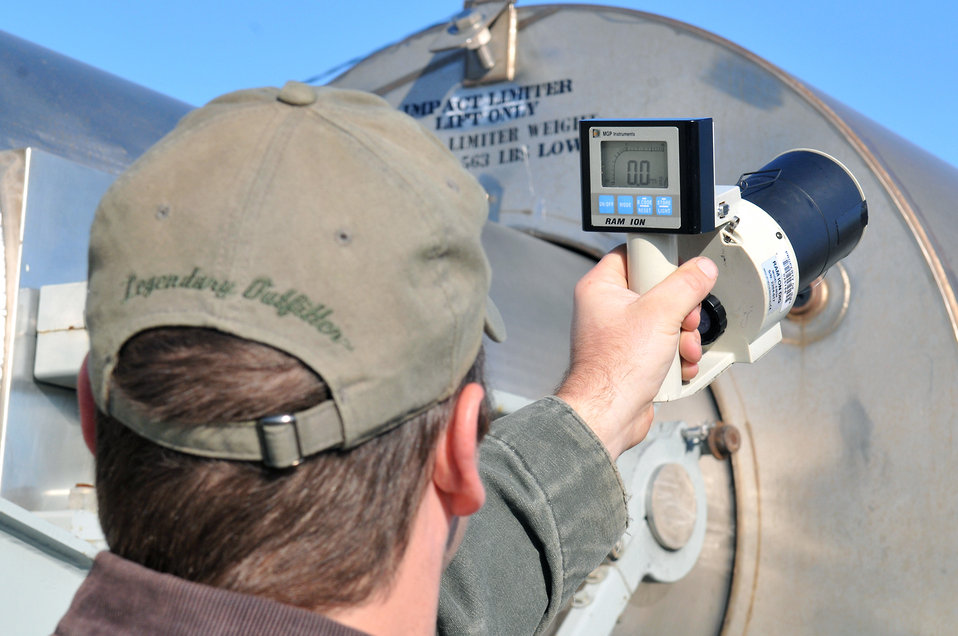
Brookhaven cleanup projects

Nearly $71 million in Recovery Act funds are putting Brookhaven National Laboratory (BNL) on track to wrap up several legacy environmental cleanup projects at two research reactors by September 2011.

The completion of the Recovery Act projects at BNL will end all EM legacy cleanup activities at the Lab.